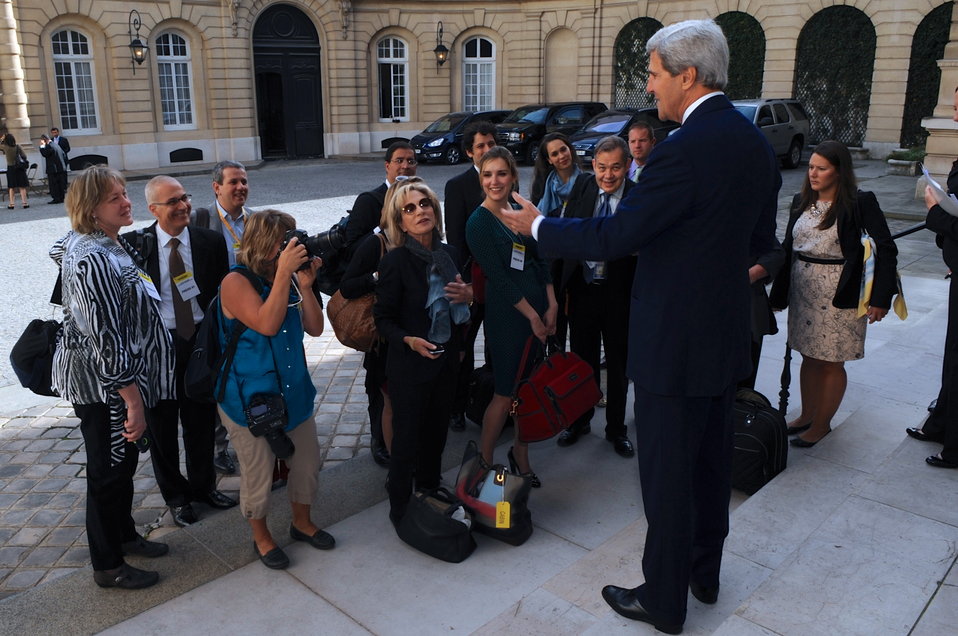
Secretary Kerry Greets the Traveling Press Corps

U.S. Secretary of State John Kerry chats with his traveling press corps after they arrived at the U.S. Chief of Mission Residence in Paris, France on September 8, 2013.